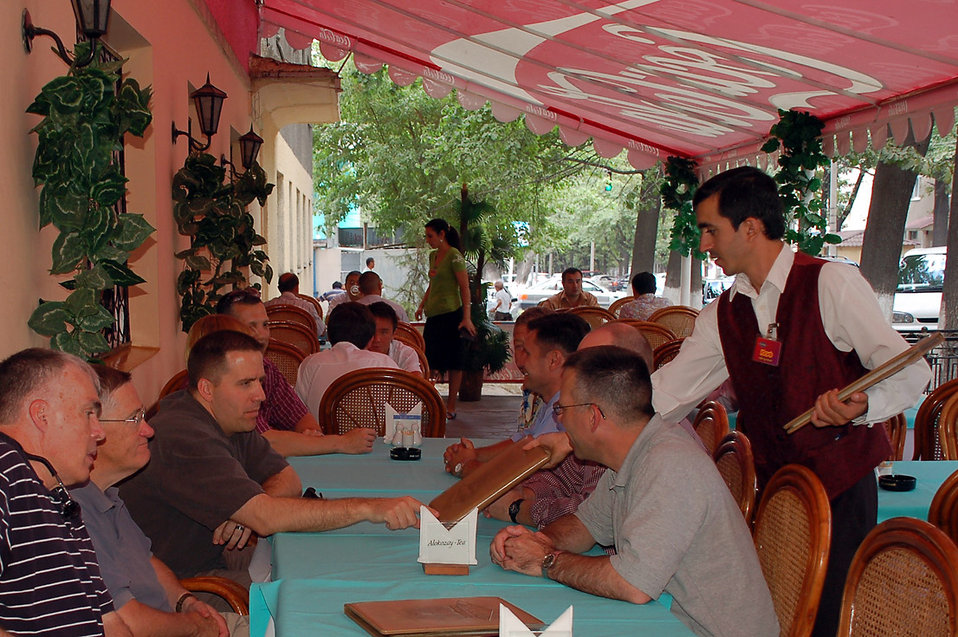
Program strengthens U.S., host-nation relationships

Manas servicemembers place their lunch orders at a local resturant in Bishkek. Deployed servicemembers to Manas have an unique opportunity through the base International Tours and Travel office to frequent more than 40 locations ranging from hiking, horseback and dining trips throughout the country and city of Bishkek.